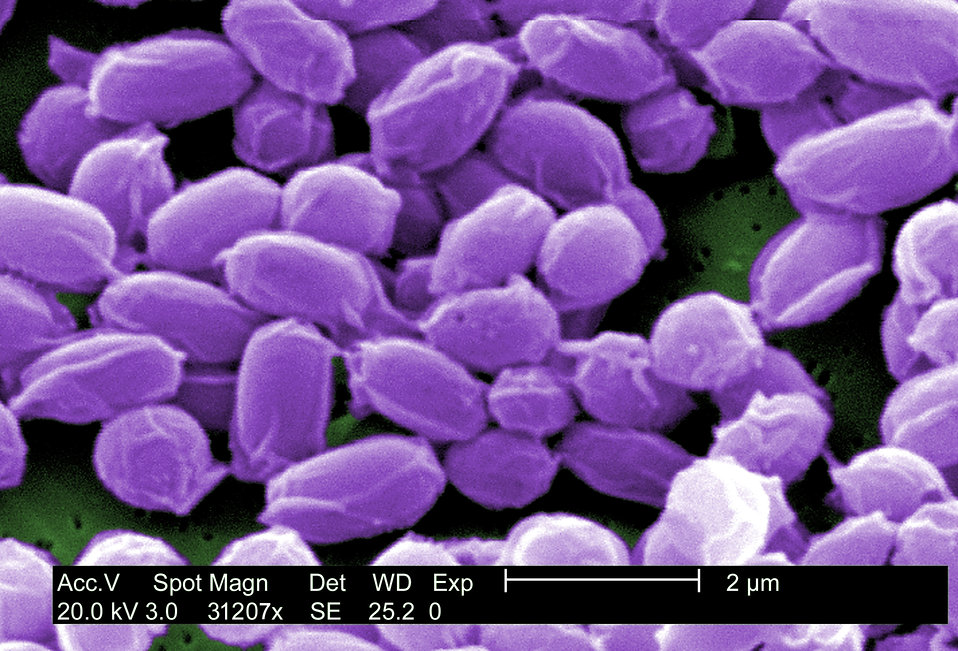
Under a very high magnification of 31,207X, this scanning electron micrograph (SEM) depicted spores from the Sterne strain of Bacillus anthracis bacteria. For a black and white version of this image see PHIL 2266.